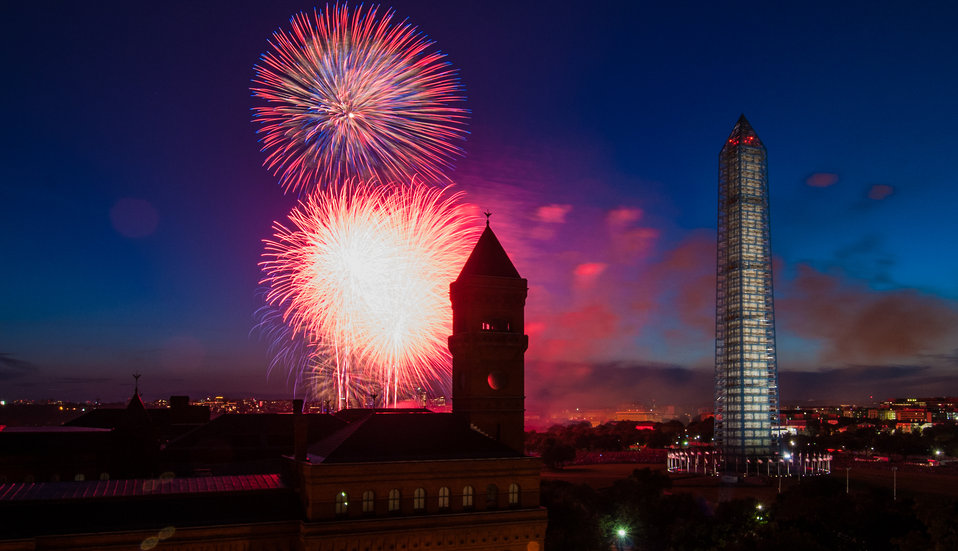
4th of July fireworks as seen from the U.S. Department of Agriculture (USDA) headquarters building, with the USDA Forest Service Yates Building in the foreground, left, and the Washington Monument in Washington, D.C., on July 4, 2013.